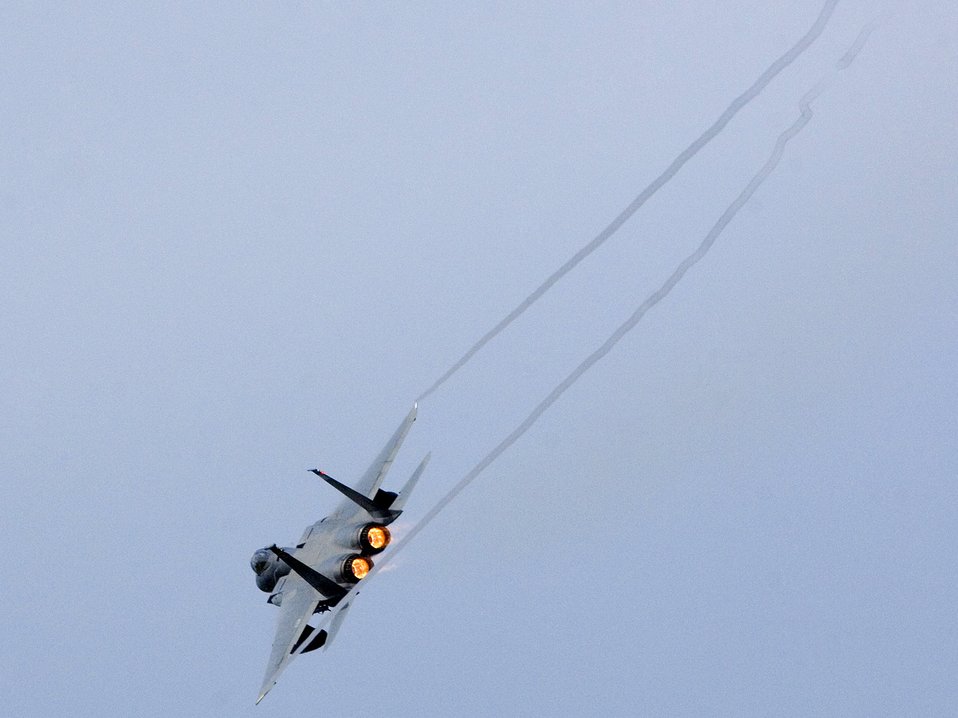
Guard unit helps protect nation

An F-15 Eagle takes off from Homestead Air Reserve Base, Fla., with afterburners blazing, during a training mission Oct. 3 for Operation Noble Eagle. The 125th Fighter Wing, Det. 1, provides the Continental NORAD Region commander rapid response to invasions of the sovereign airspace of the U.S. and responds with appropriate defense measures against all hostile actions directed at the people and property of the U.S.